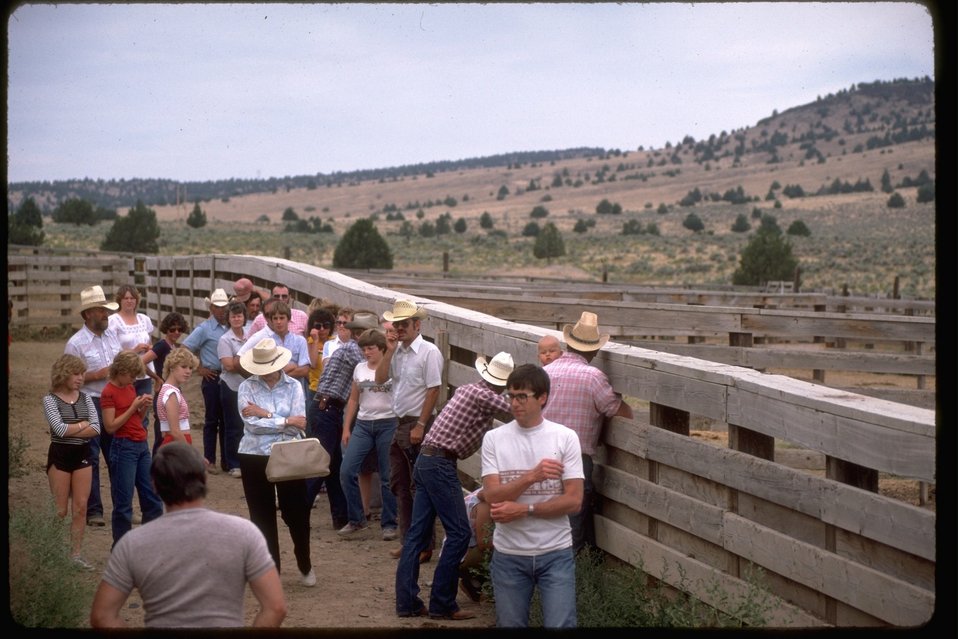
Adopters await their turn at the Burns Wild horse Corrals in Burns, Oregon.